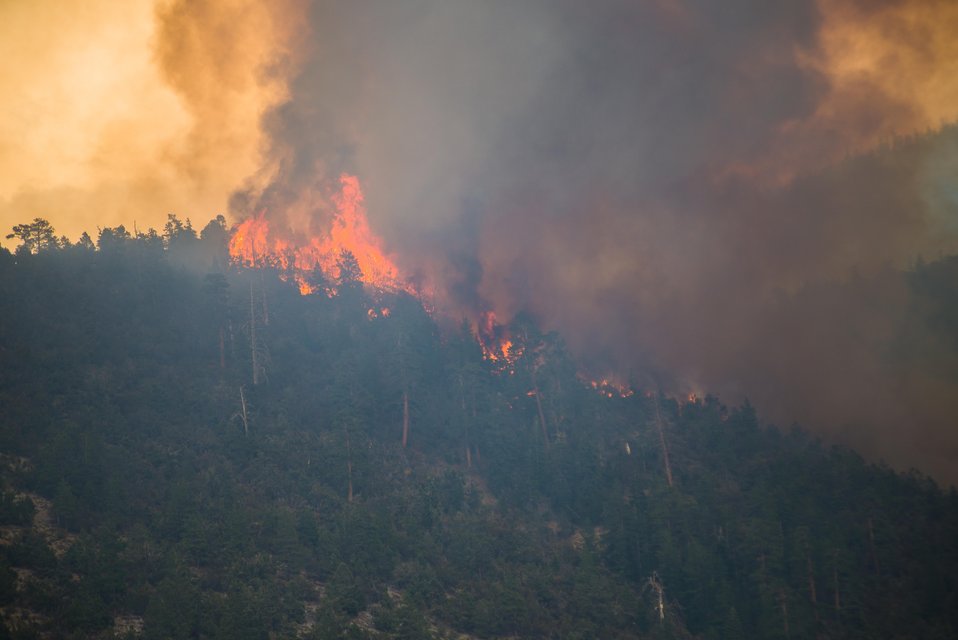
The La Madre fire is part of the Carpenter Fire in the Toiyabe National Forest near Humboldt, NV was caused by a lightning strike on Jul. 1, 2013. The fire has consumed nearly 27,881acres and is presently 70% contained.